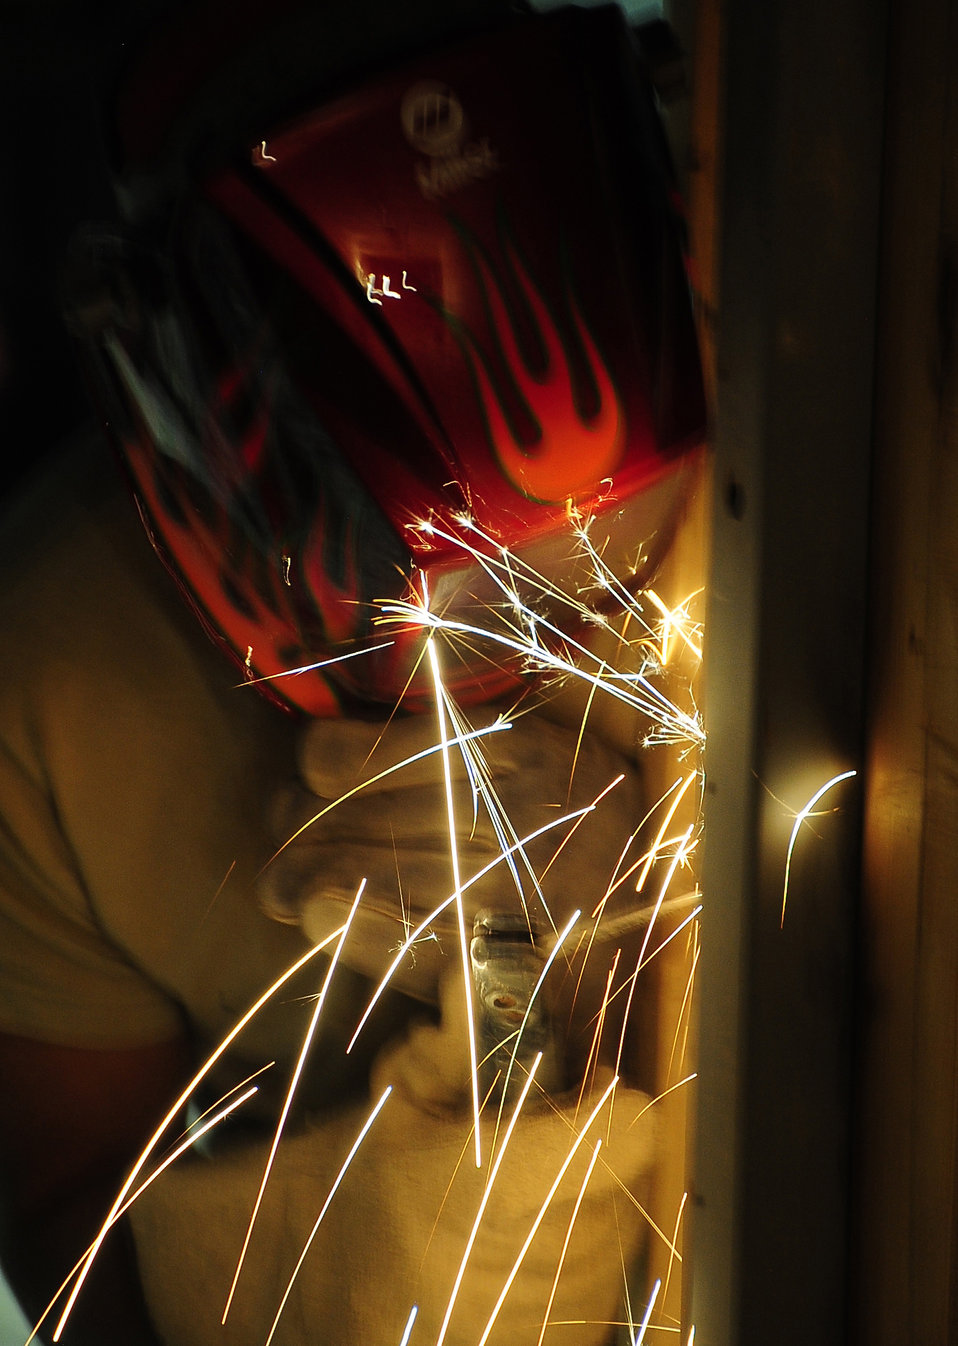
A spark-ling situation

Staff Sgt. Robert Calton welds a door frame together during construction of a new tactical operations center for the Army's 14th Engineer Battalion May 23 at Ali Base, Iraq. Sergeant Calton, along with members of the 557th and 1st Expeditionary RED HORSE Squadron, are working on multiple base infrastructure projects for the Air Force and Army stationed on Contingency Operating Base Adder and local forward operating bases.